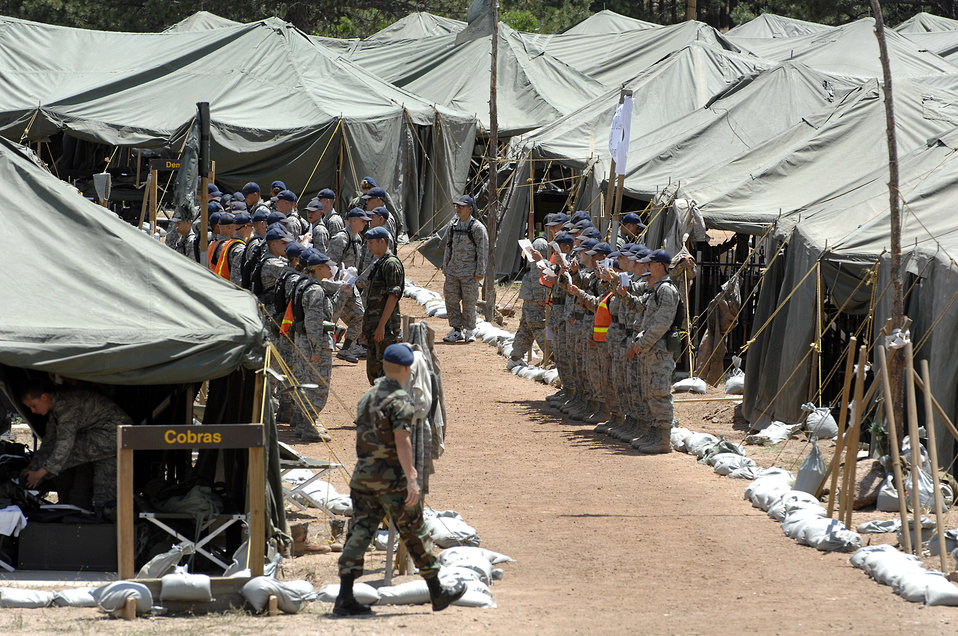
Time for study

U.S. Air Force Academy basic cadets read their study guide during a break in the tent area of the Jacks Valley training encampment.